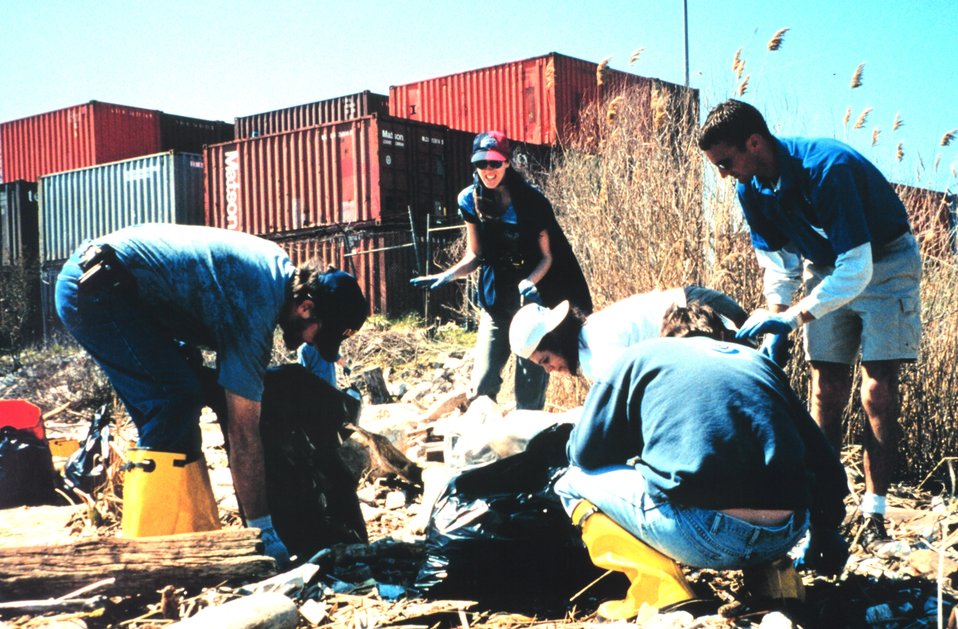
Volunteers helping clean up the wetlands and waterfront area around Fort McHenry in Baltimore Harbor.